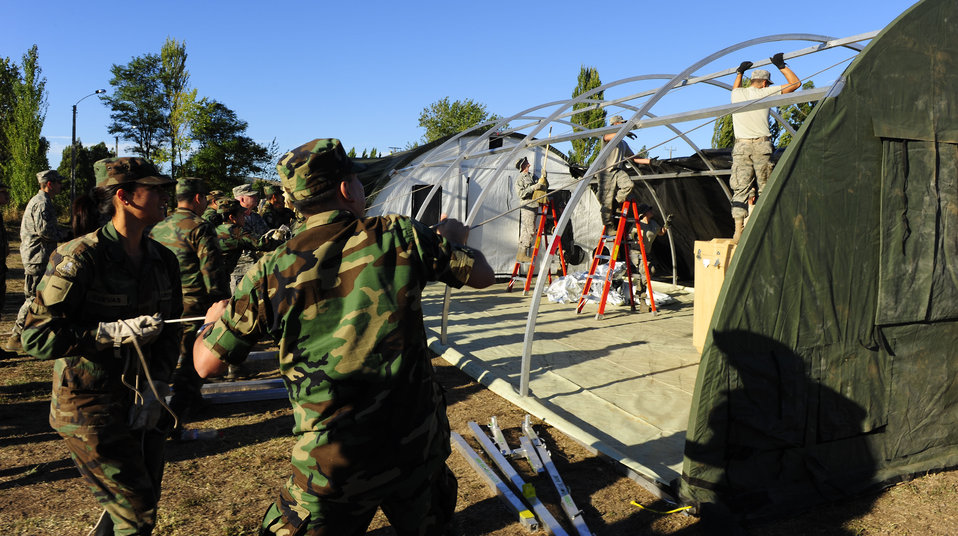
Airmen expand local hospital to meet Chileans’ medical needs

Chilean soldiers help Airmen from an Air Force Expeditionary Medical Support team erect an additional hospital tent March 12, in Angol, Chile. The additional tent will help meet the medical needs of the local community.